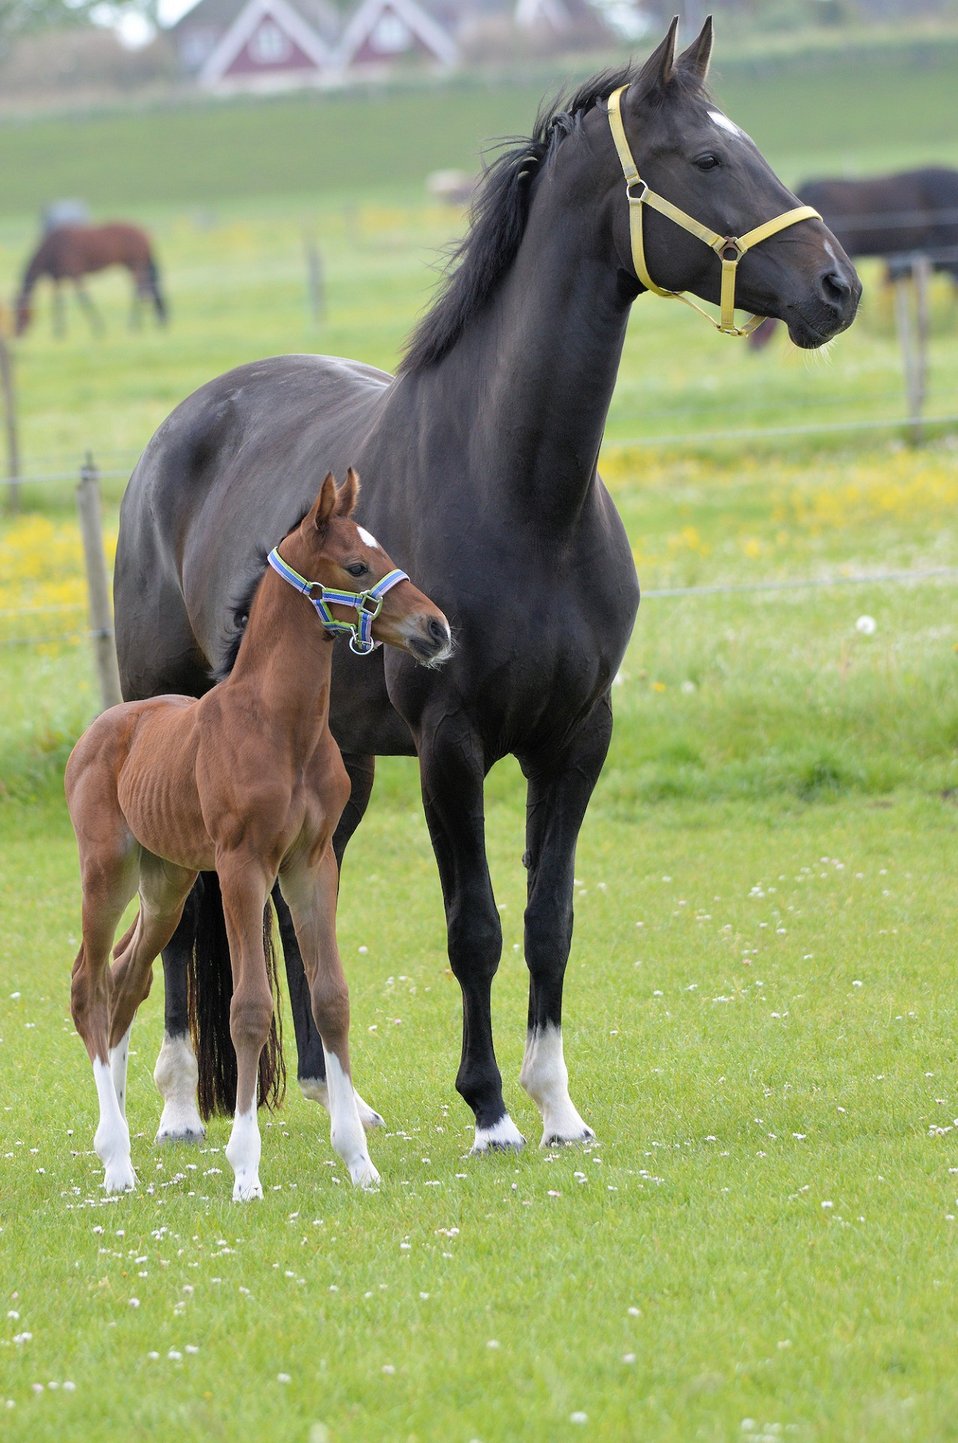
Foal and mare.